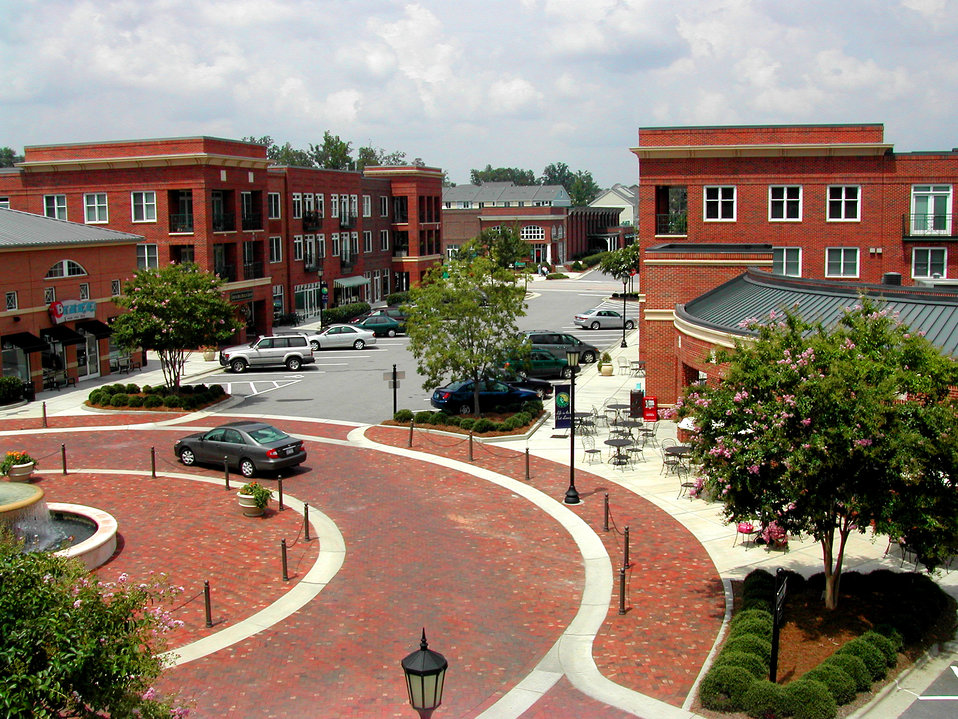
This 2005 image showed how a new, large, mixed-use development brought residential, retail, and office spaces into close proximity. Curb cuts, well-marked crossings, sidewalks, and accessible commercial and public spaces made this an attractive community for pedestrians. Also, apartments over the stores were accessed via elevators. Some of the other apartments in the complex had varying levels of accessibility as well. Most of the dwellings in the project, however, were impossible to enter if walking was a problem. People could visit and shop, but could not easily live there if ones mobility was an issue.